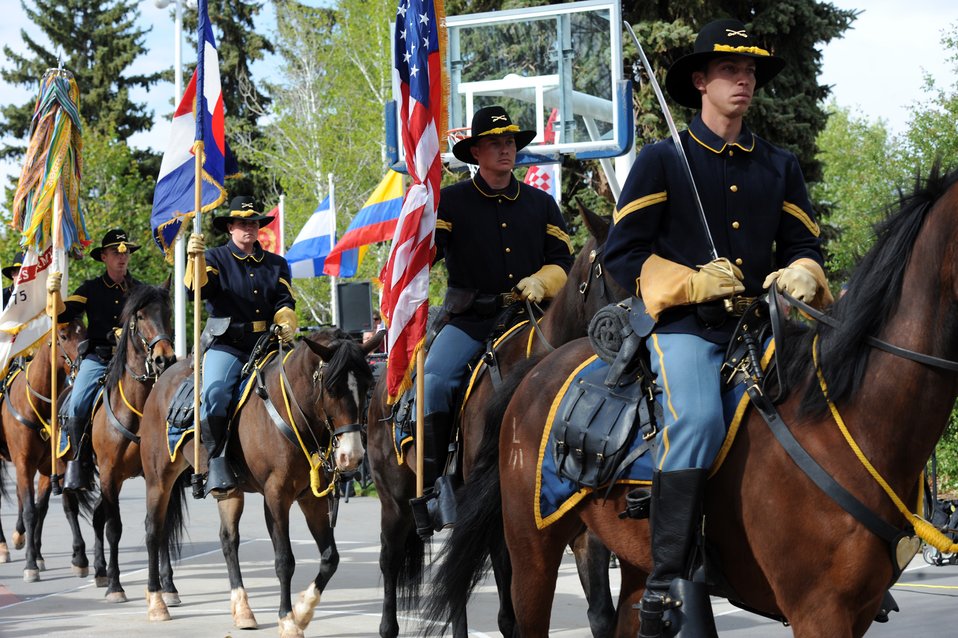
Opening Ceremony

Members of the Ft. Carson Mounted Color Guard travel down the Olympic Pathway May 16, 2011, during the 2011 Warrior Games opening ceremony at the U.S. Olympic Training Center in Colorado Springs, Colo. Some 200 wounded warriors and disabled veterans from all the military services are competing in paralympic-style athletic events May 16 through May 21.